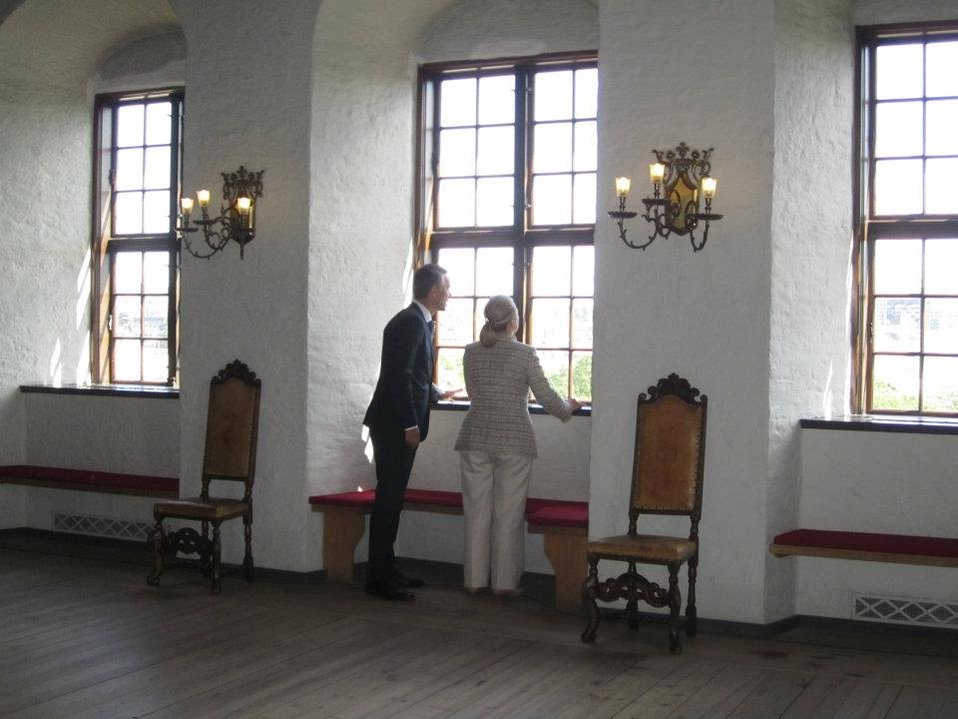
Norwegian Prime Minister Stoltenberg and Secretary Clinton Catch a Peak of the View

Norwegian Prime Minister Jens Stoltenberg and U.S. Secretary of State Hillary Rodham Clinton catch a peak of the view outside of the Chrisian IV Room at the Akershus Castlein in Oslo, Norway, on June 1, 2012.